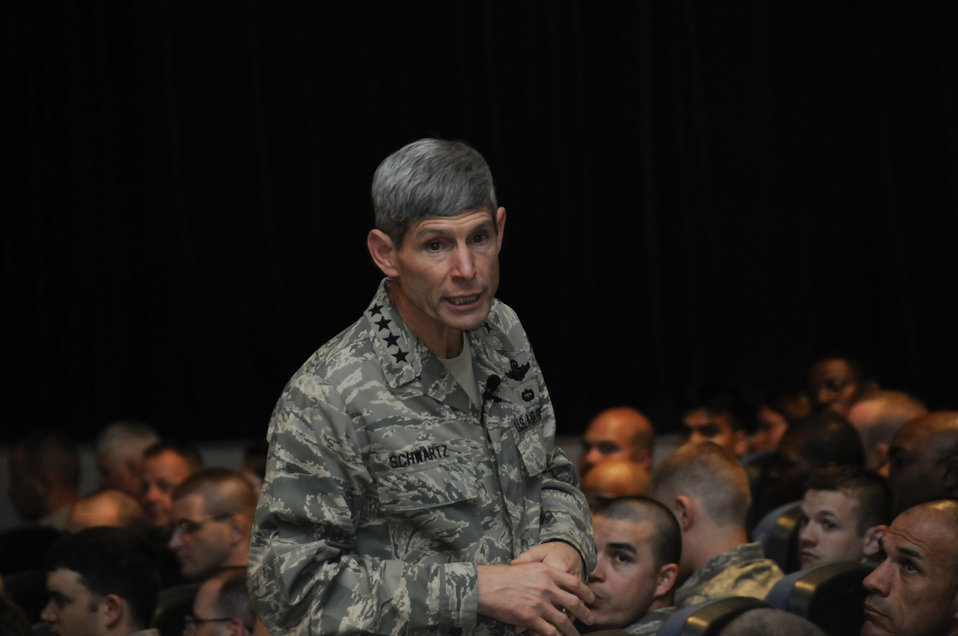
CSAF visits Southwest Asia

Air Force Chief of Staff Gen. Norton Schwartz speaks to an assembly of Airmen gathered from the 379th Air Expeditionary Wing Oct. 20. The general thanked Airmen for their contributions as part of the joint team supporting the war on terrorism. The visit marked the CSAF's first trip to the U.S. Air Forces Central area of responsibility since his appointment as the Air Force chief of staff.